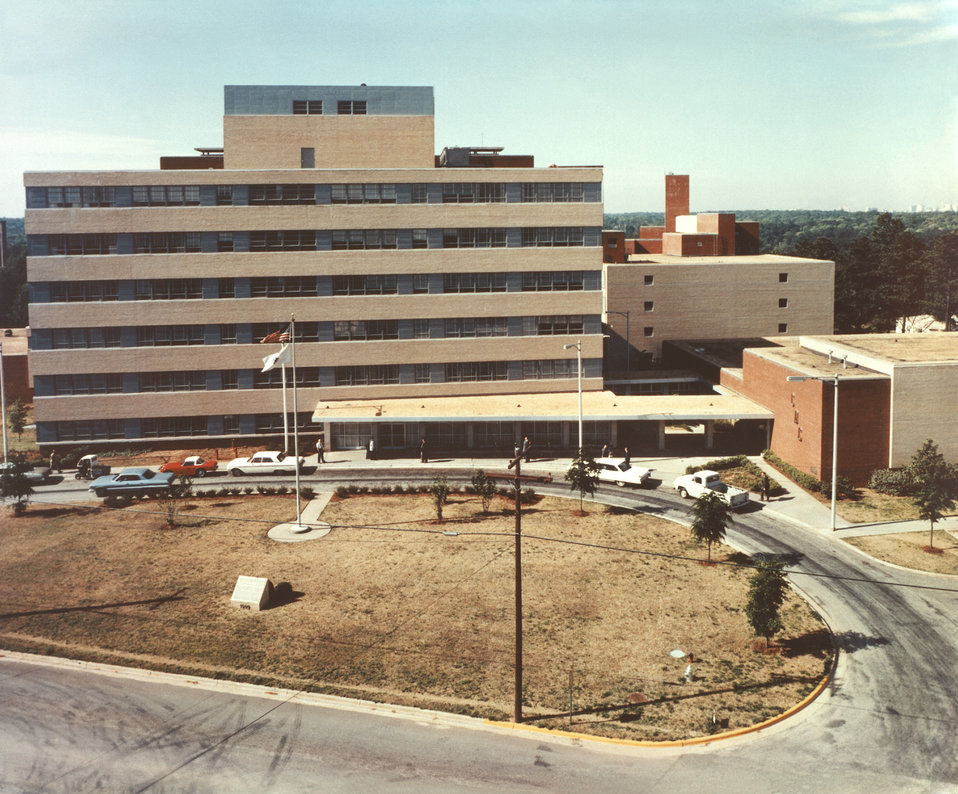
This historic aerial view, looking towards the south, depicts the appearance of the Centers for Disease Control and Prevention's (CDC) geographic presence in 1963. Building 1 is seen in the foreground, as it still faces Clifton Road today.